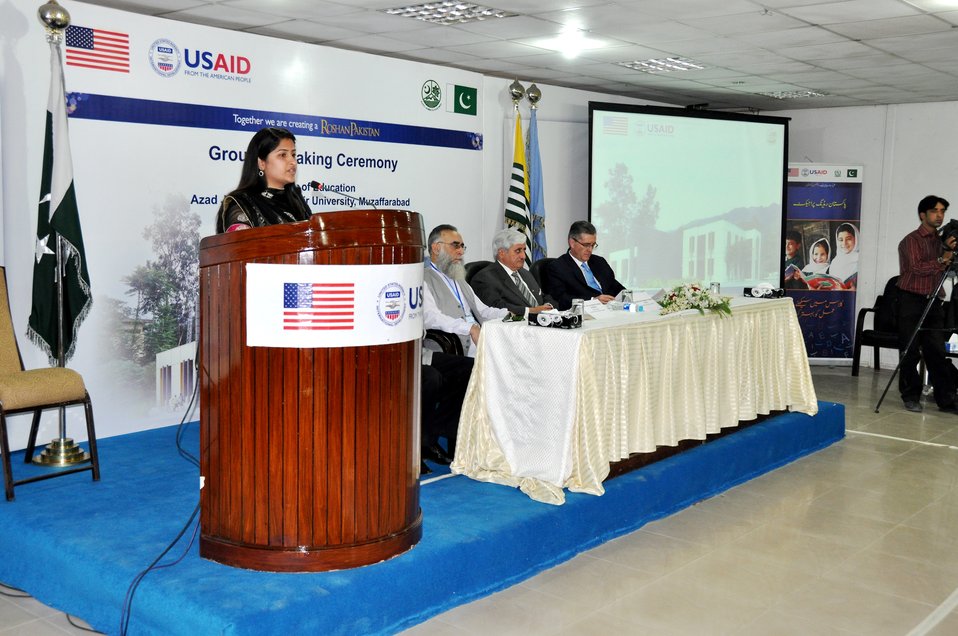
The United States Ambassador to Pakistan, Richard Olson broke ground for a U.S. funded construction of a new Faculty of Education building in Muzaffarabad, AJK. 03